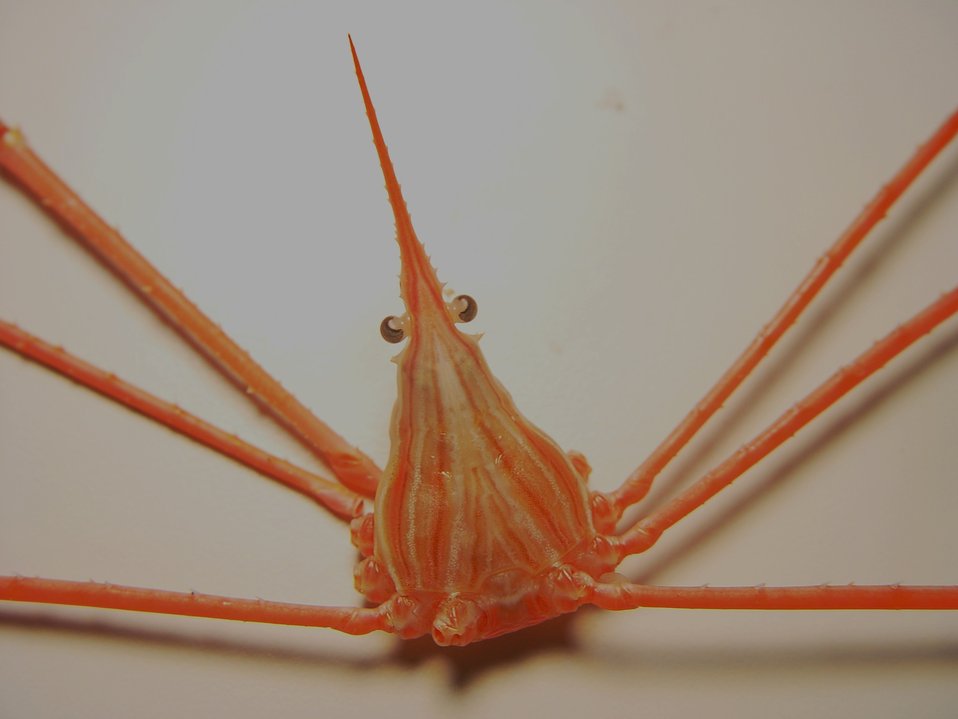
Yellowline arrow crab ( Stenorhynchus seticornis )